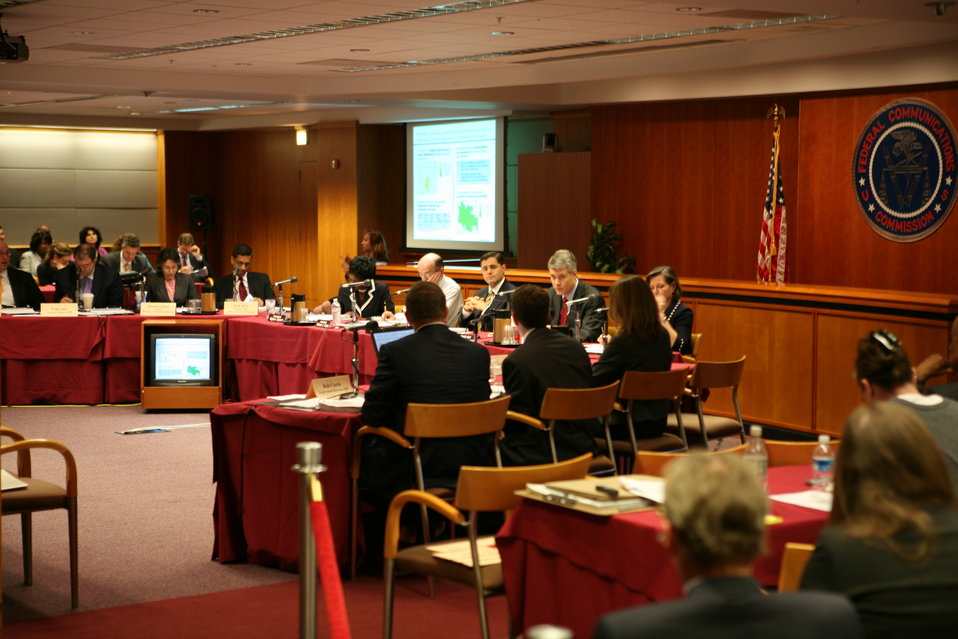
Broadband Midterm Review 9-29-09